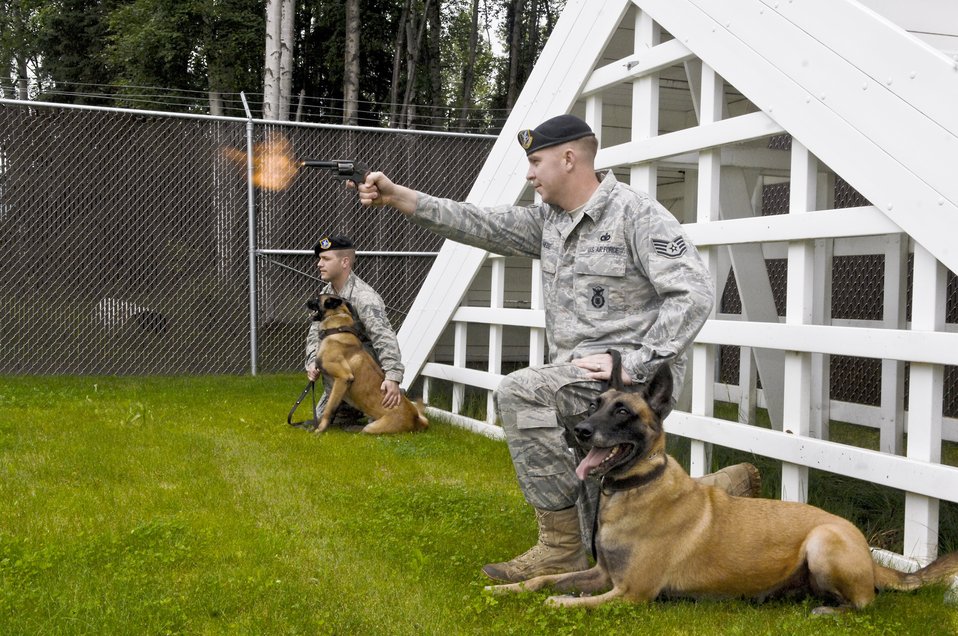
Working dogs at Elmendorf

Staff Sgt. Scott Heise fires a training pistol during a daily training exercise with fellow military working dog trainer, Staff Sgt. Greg Maatta, July 22, 2010, at Joint Base Elmendorf-Richardson, Alaska. Sergeant Heise is working with Dino while Sergeant Maatta works with Dusty. Both Airmen are with the 3rd Security Forces Squadron.